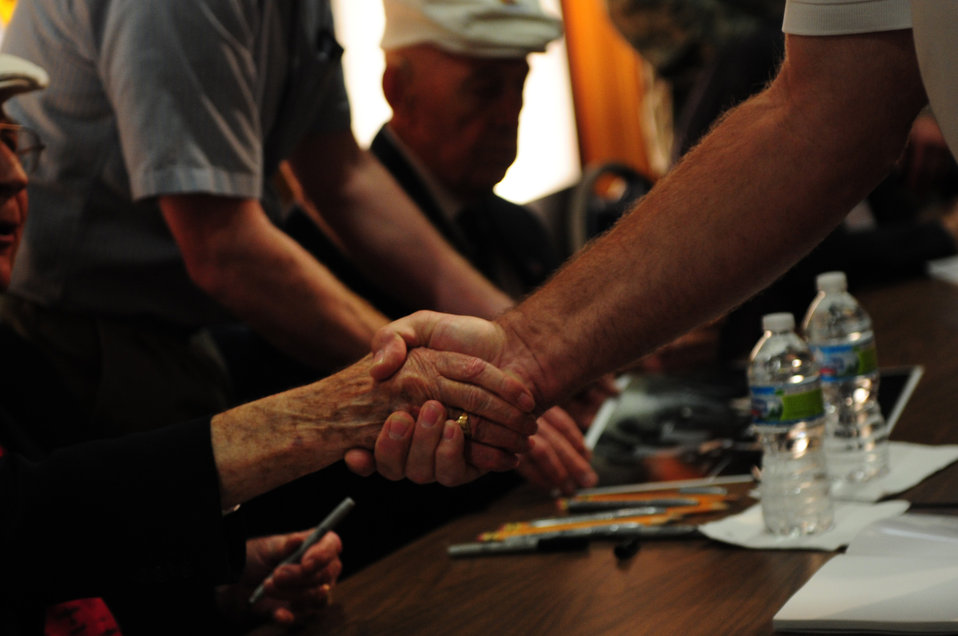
68th Doolittle Raiders Reunion

A visitor shakes the hand of U.S. Air Force Maj. Thomas C. Griffin, navigator of the ninth B-25 Mitchell Bomber that took part in the Doolittle Tokyo Raid, during an autograph session at the National Museum of the U.S. Air Force at Wright Patterson Air Force Base, Ohio, April 16, 2010. The Doolittle Raiders' 68th reunion commemorates the anniversary of the Doolittle Tokyo Raid on April 18th, 1942, when U.S. Army Air Forces Lt. Col. Jimmy Doolittle's squad of 16 B-25s bombed targets in response to the Japanese attack on Pearl Harbor.